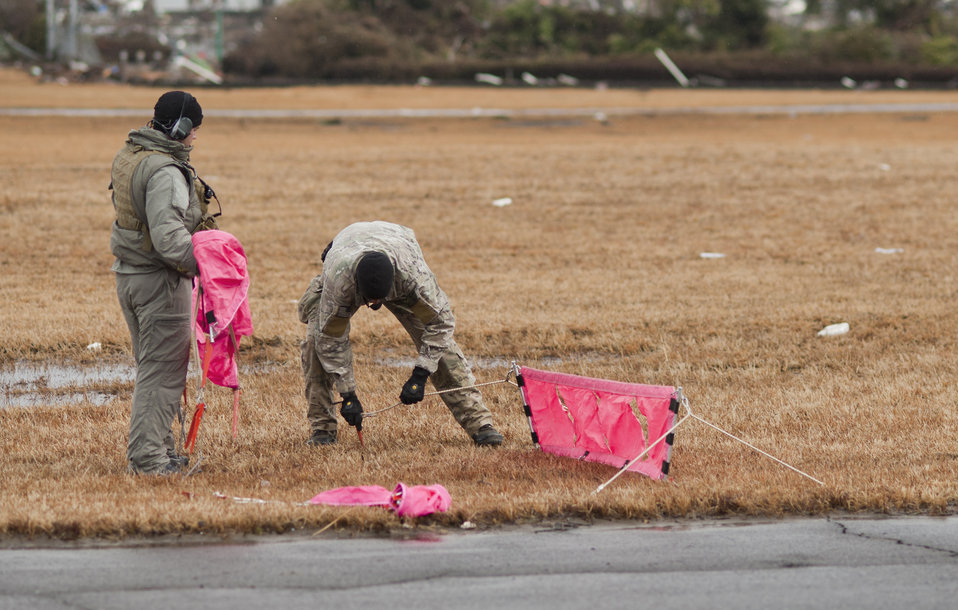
MC-130H Combat Talon II arrives at Sendai Airport

Combat controllers from the 320th Special Tactics Squadron set up flightline markers to inform pilots of the useable space on the runway March 16, 2011, at Sendai Airport, Japan.